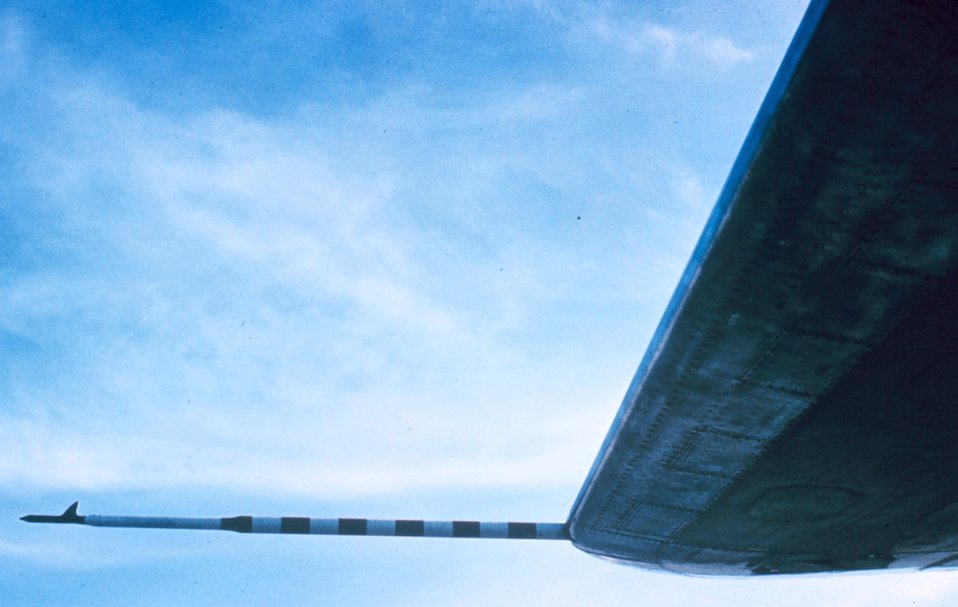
Pitot system.